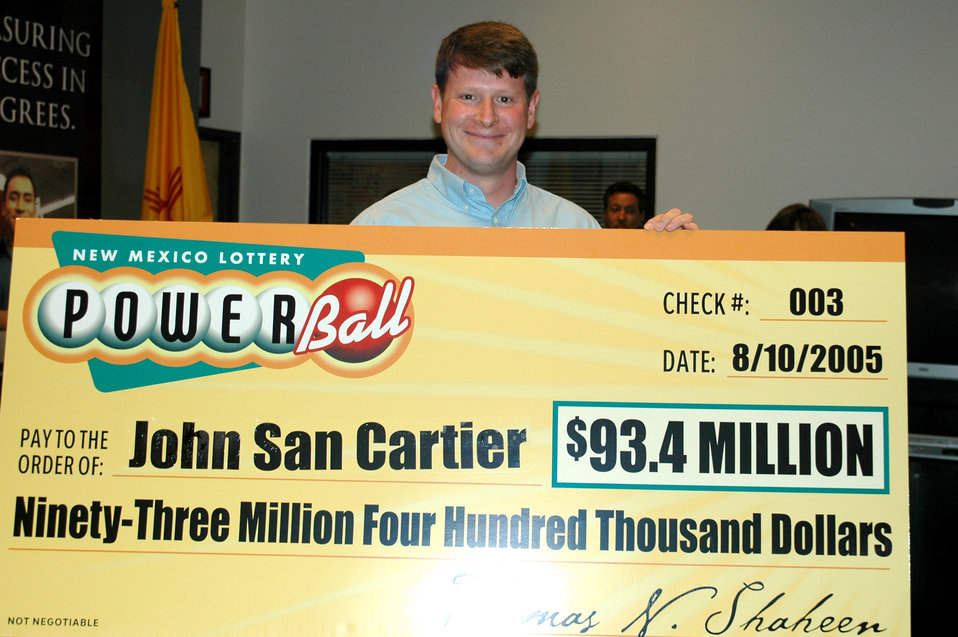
Kirtland Airman hits jackpot

KIRTLAND AIR FORCE BASE, N.M. -- Master Sgt. John San Cartier holds his winning lottery check for $93.4 million. He is a special operations loadmaster instructor with the 58th Training Squadron here.